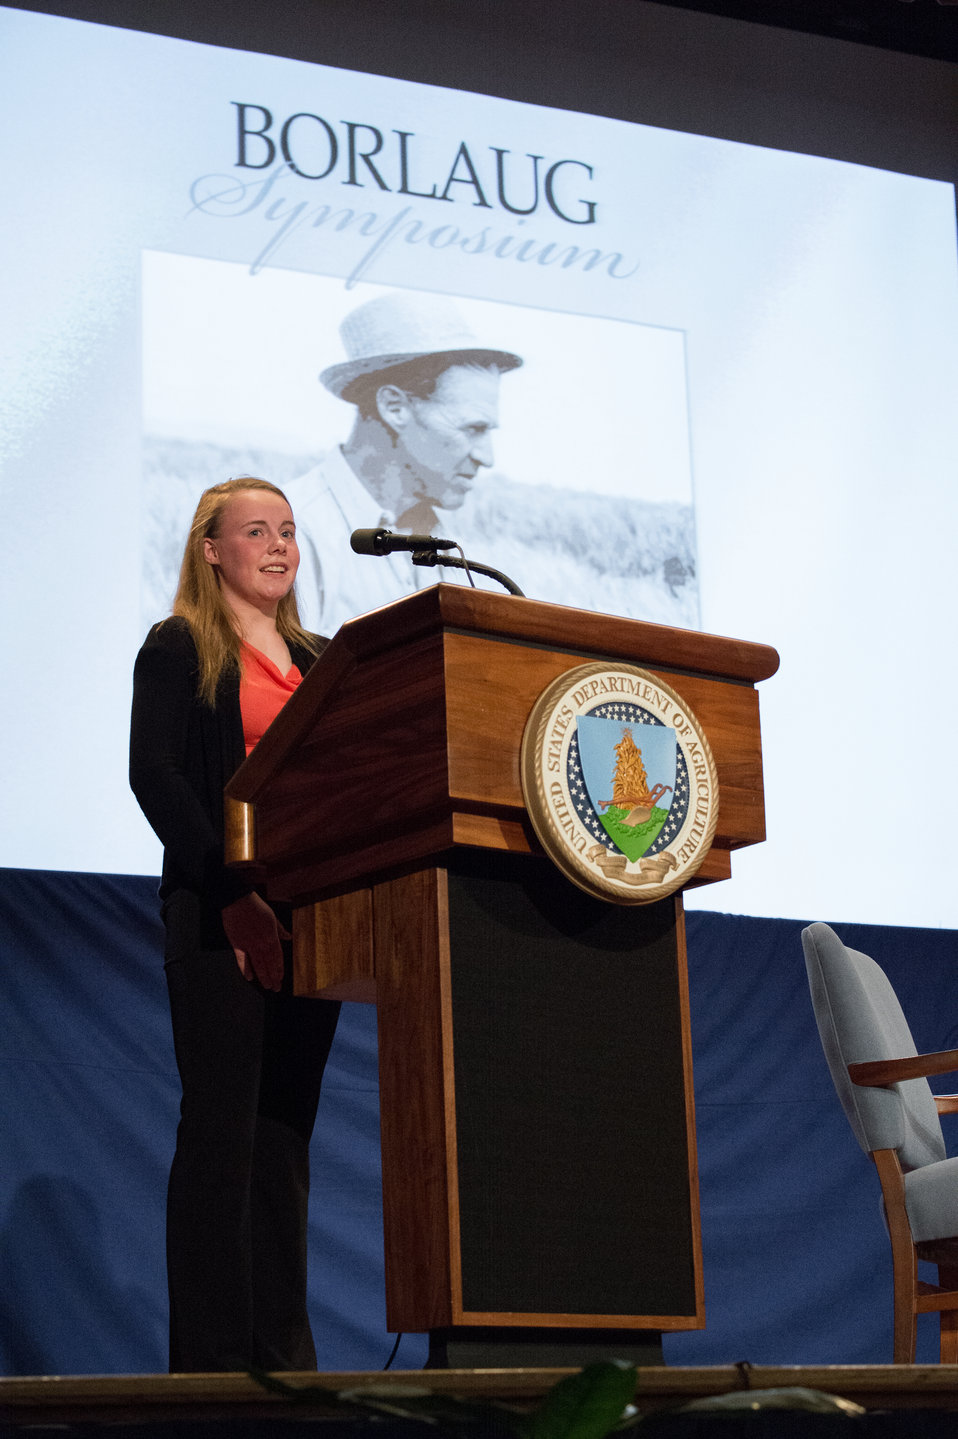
4-H Clever Clovers, Mercer County, NJ Vice President Renee Stillwell presents her work to help achieve Dr. Borlaug’s vision as the next generation of hunger fighters, at the Borlaug Symposium commemorating the late Dr. Norman E. Borlaug's 100th Birthday hosted by the U. S. Department of Agriculture (USDA) in the Jefferson Auditorium of USDA in Washington, D.C on Tuesday, Mar. 25, 2014. The symposium highlighted current efforts addressing global hunger.